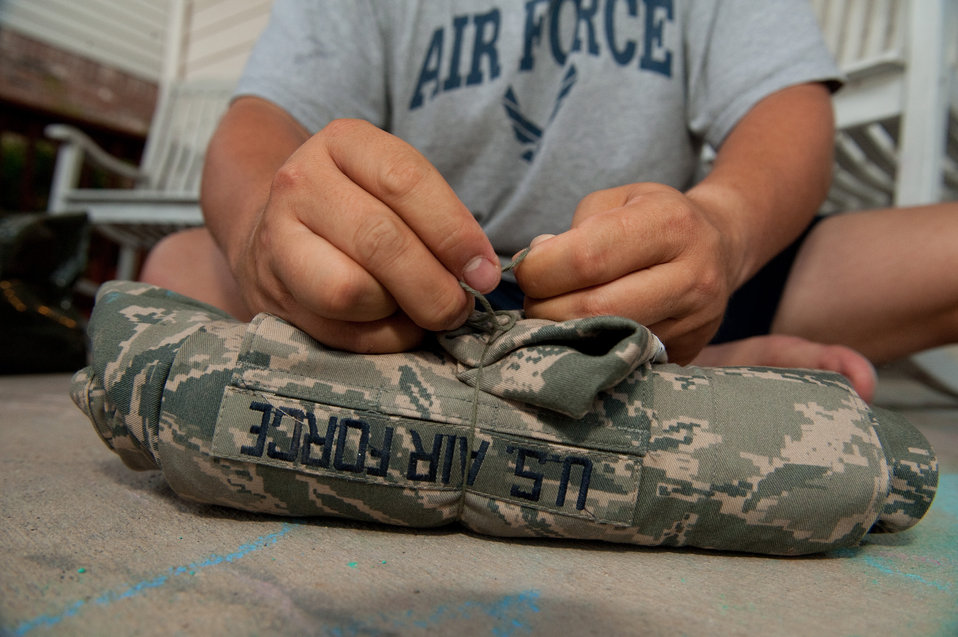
Blogging Couple Deployment preperation

Master Sgt. Rudy Gamez tightens the knot on a rolled uniform blouse before it is slipped into a bag of permethrin insect repellent and water emulsion at his home in San Antonio, Texas, on July 13, 2010. The bag will be used to soak the blouse or pants of a uniform set, in a repellent and water emulsion, providing some protection for many washings. He is preparing for Combat Skills Training and his sixth deployment to Southwest Asia. Later this year he and his wife Tech. Sgt Christina Gamez will both be deployed and blogging about their experiences.